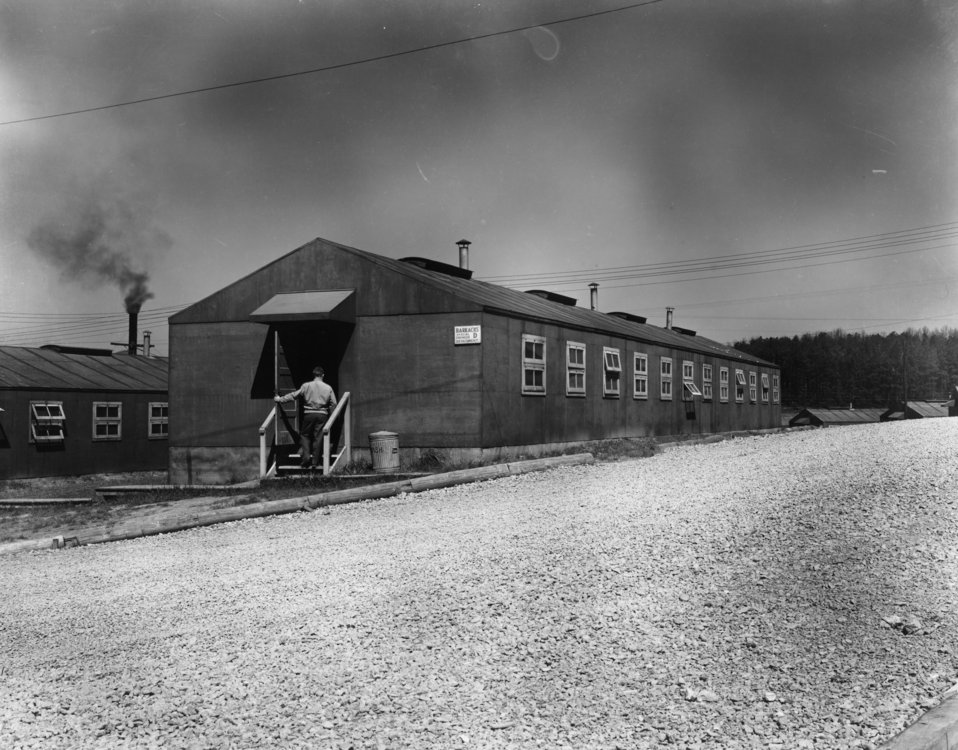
Army Activity at Oak Ridge